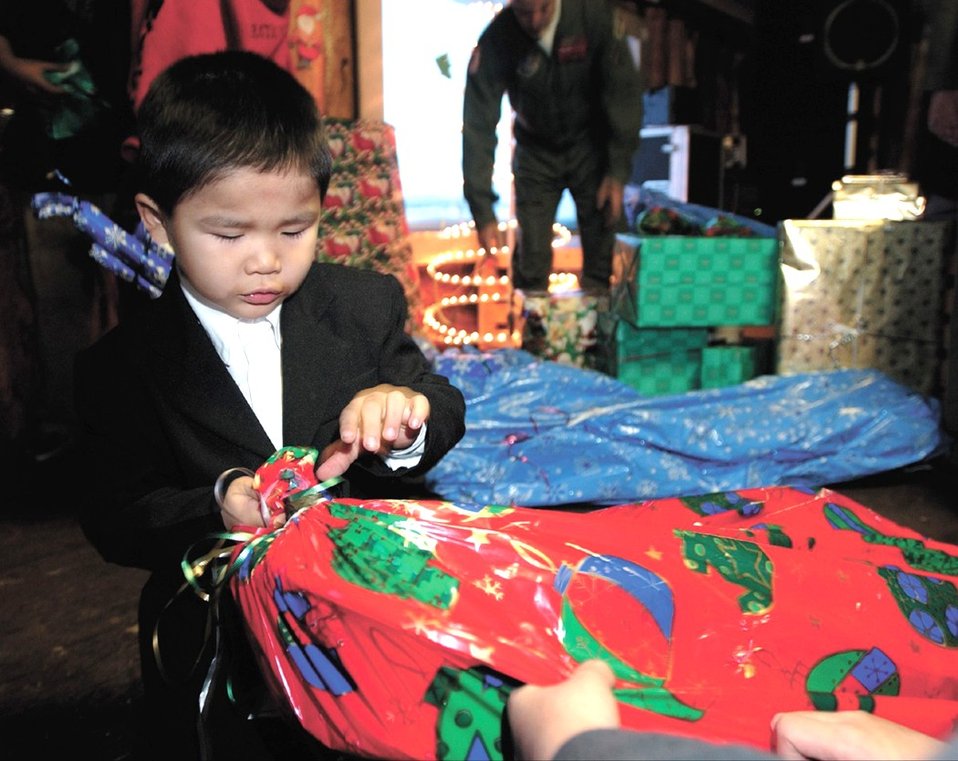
Santa visits Arctic Village

ARCTIC VILLAGE, Alaska -- Kobe Nickolai unwraps a present from Santa Claus. Santa traveled here on a C-130 Hercules from Elmendorf Air Force Base's 517th Airlift Squadron to deliver gifts and supplies for the 37th year in a row.